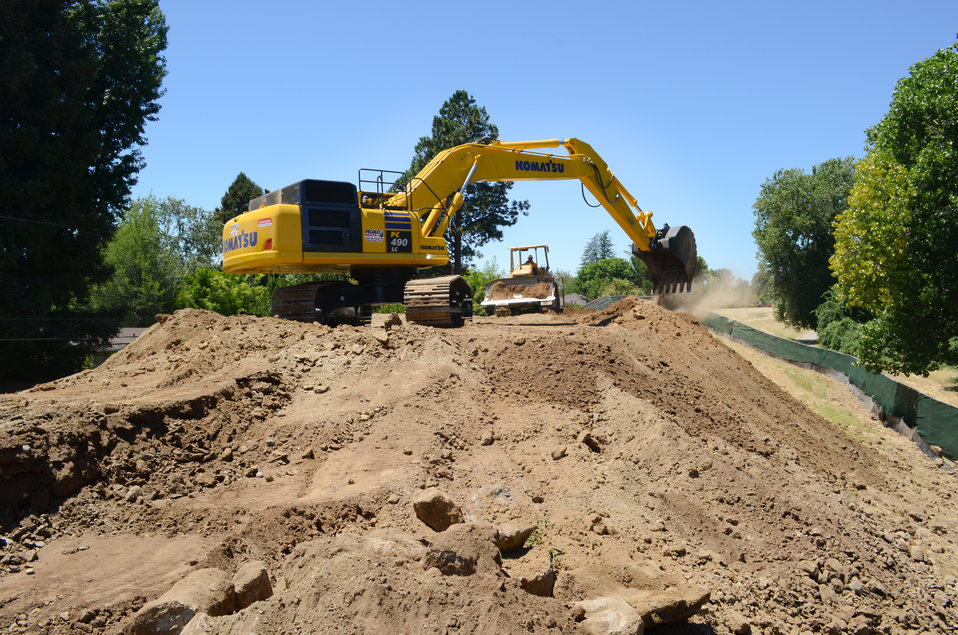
Crews excavate the levee on the first day of construction near River Park

Construction crews for the U.S. Army Corps of Engineers Sacramento District excavate the levee during the first day of construction July 16, 2013, near the River Park neighborhood of Sacramento, Calif. The project, near the City of Sacramento's Sump Station 10, will fill in a gap in the levee's existing cutoff wall where construction was complicated by the station's pipes, which run through the levee.